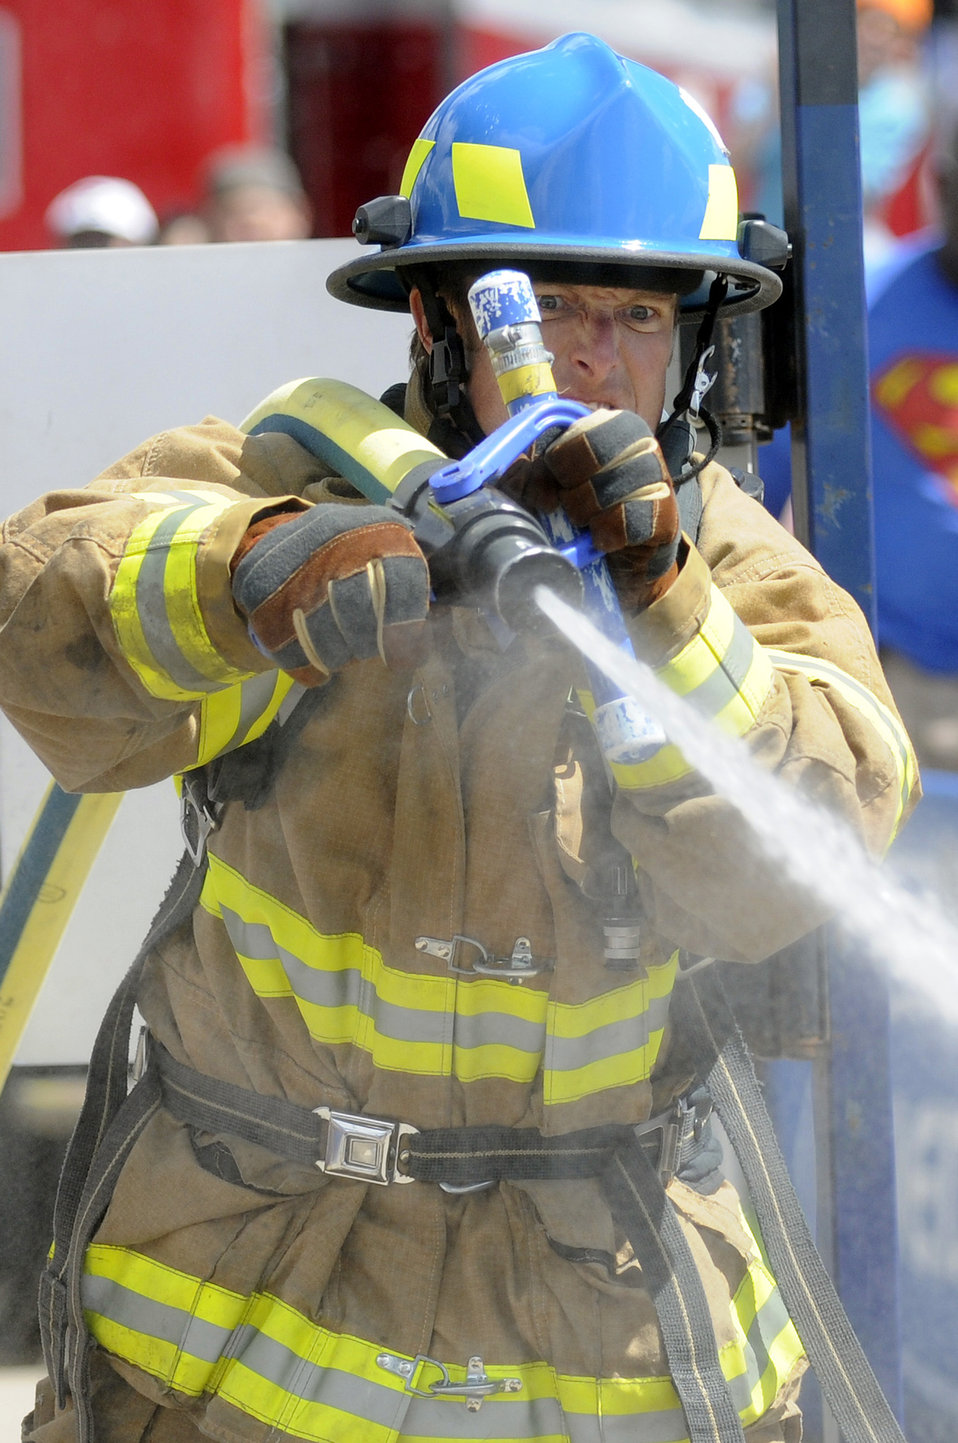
Firefighters Combat Challenge

Air Force Academy firefighter Mark Caraway of the USAFA Anchors relay team takes aim at the volleyball-sized target during the relay. The two-day regional Firefighter Combat Challenge competition was held June 24/25 at the Air Force Academy's Falcon Stadium, showcasing the skills of nearly 200 military and civilian firefighters, which included 28 academy firefighters. The national and world championships will be held in October and November, of which all academy firefighters qualified to participate.